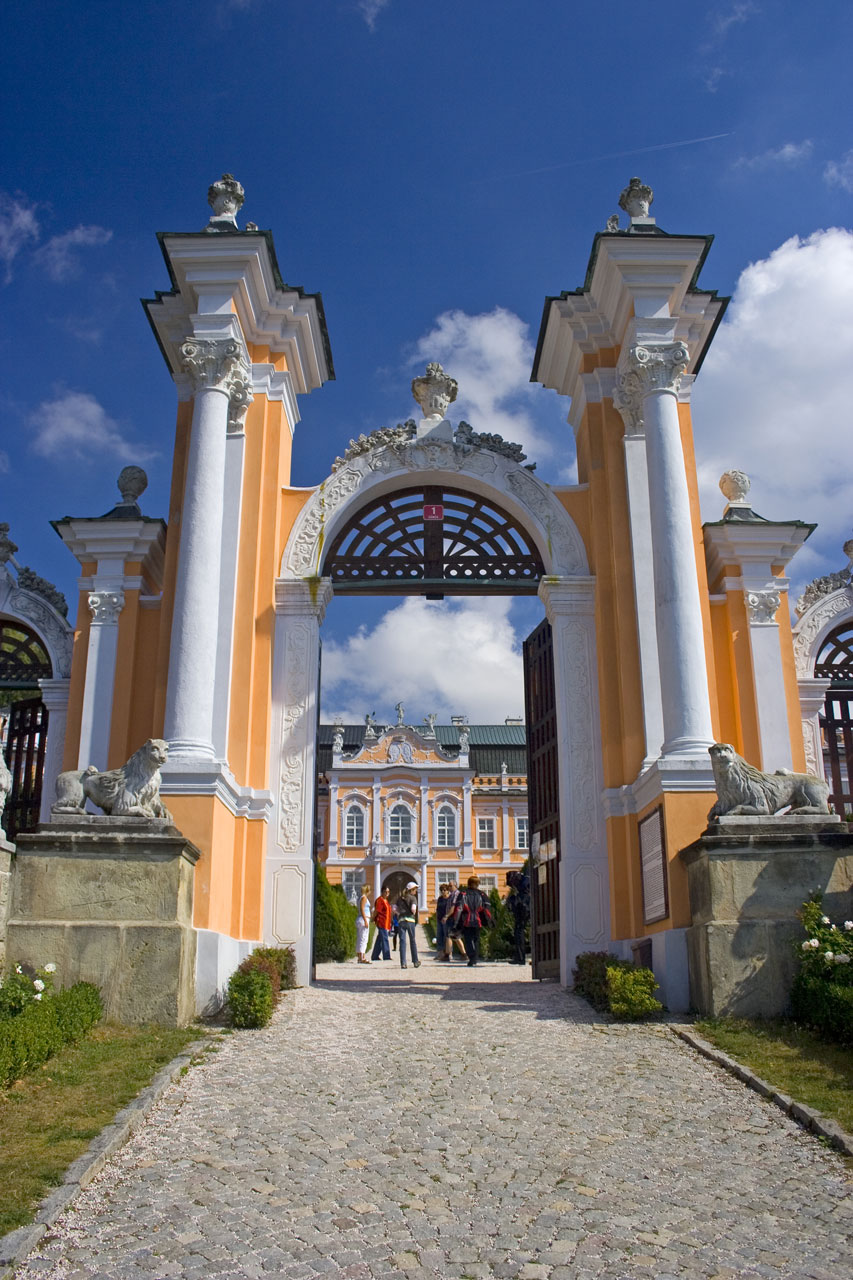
Gate to the castle

A gate to the castle in nove hrady in bohemia.